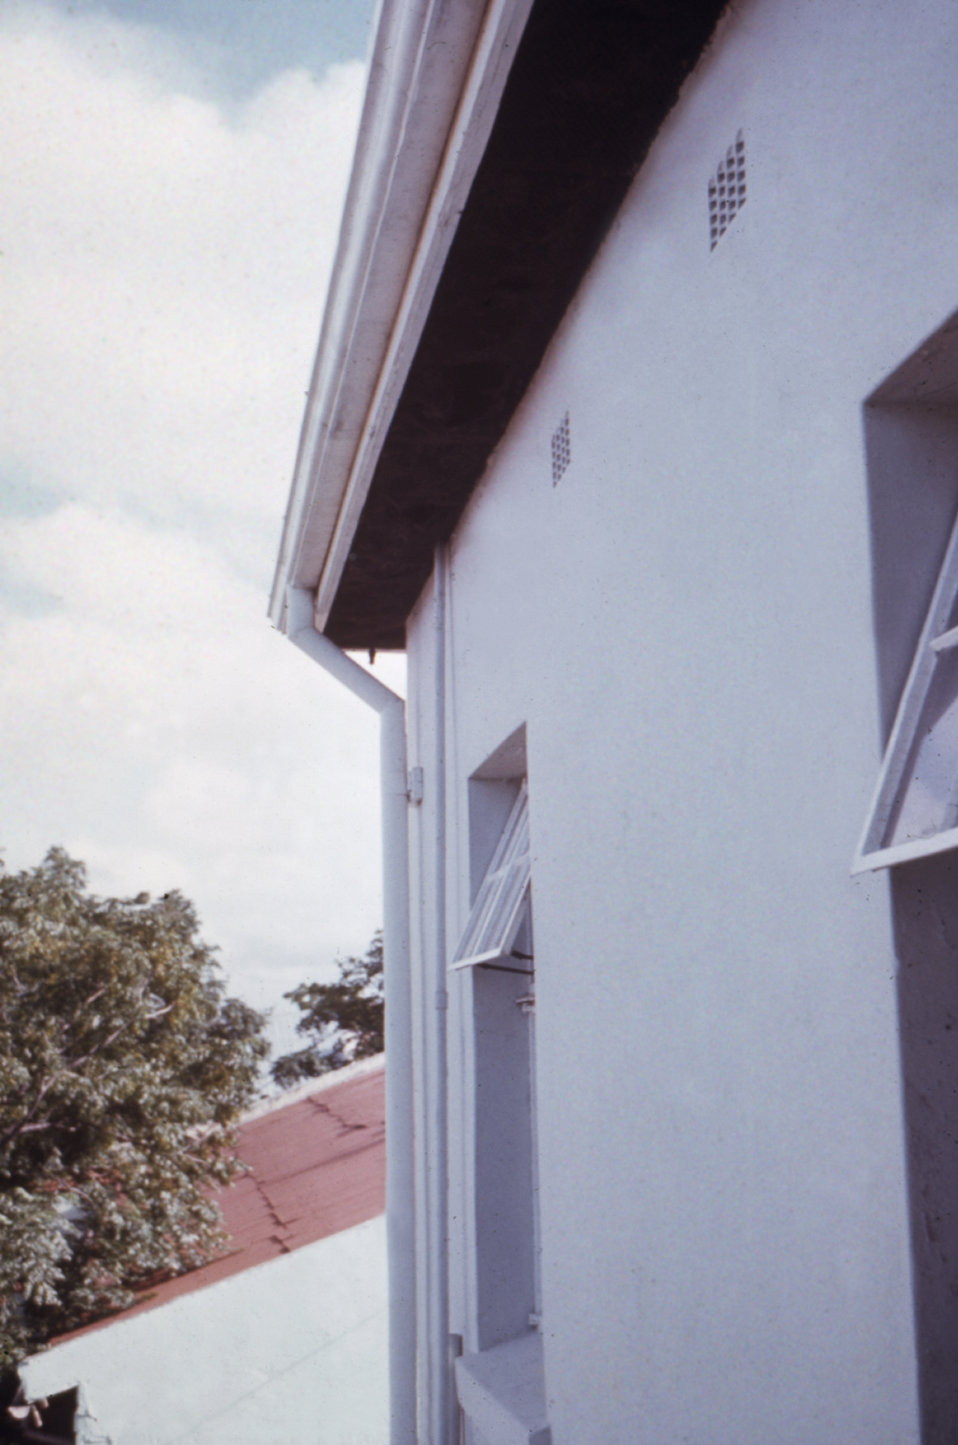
This photo was taken outside a hostel in Salisbury, Rhodesia, i.e., now Zimbabwe, during a 1975 Marburg virus investigation.